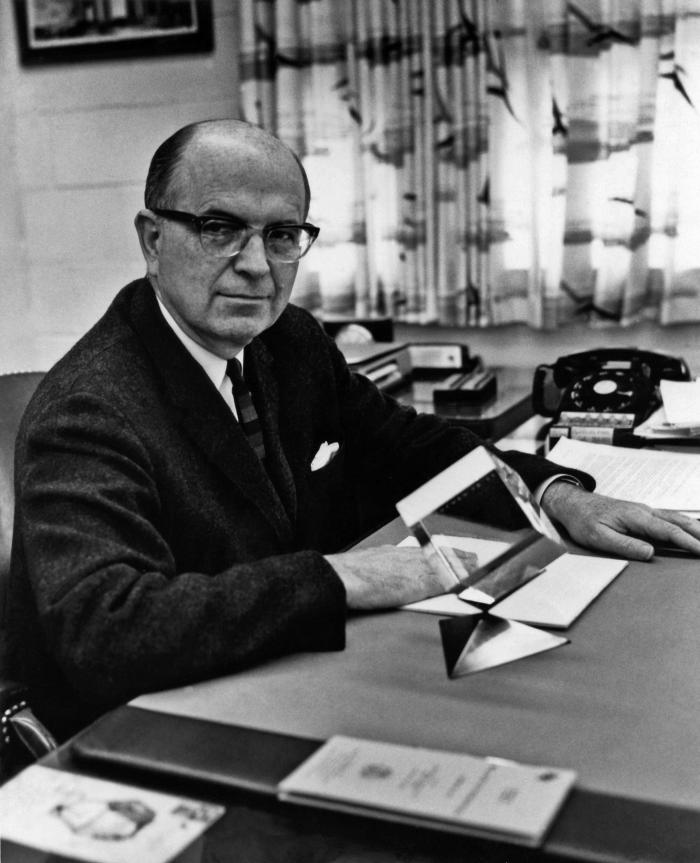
Seated at his desk at the Centers for Disease Control headquarters in Atlanta, Georgia, was Dr. Alexander D. Langmuir (1910 - 1993), chief epidemiologist at the CDC for two decades.